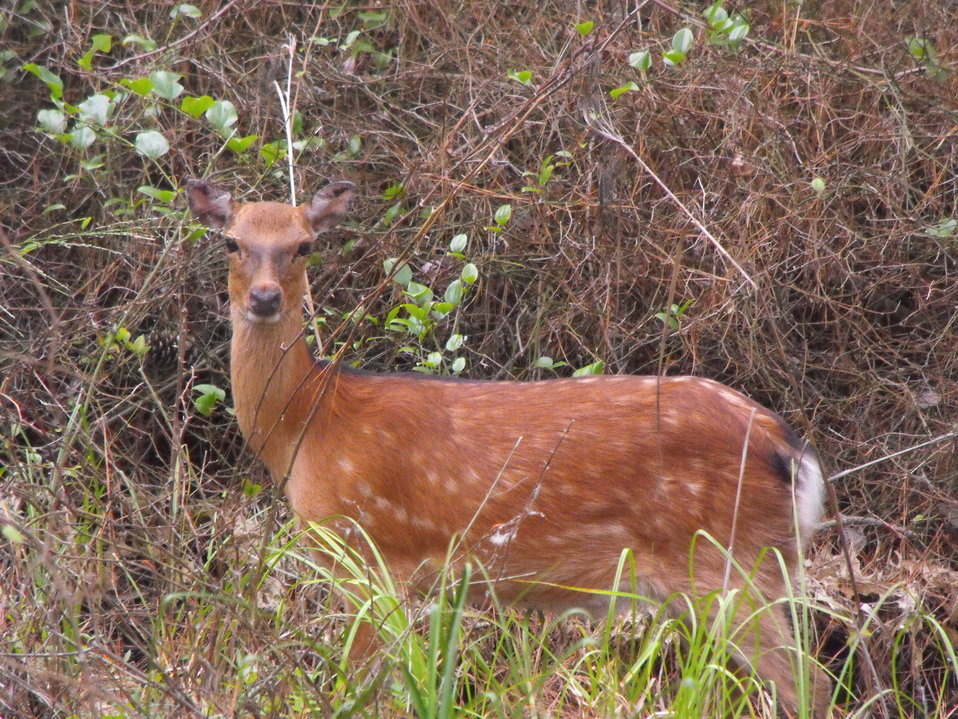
Sika Elk

A sika elk at Chincoteague National Wildlife Refuge / Assateague Island National Seashore.